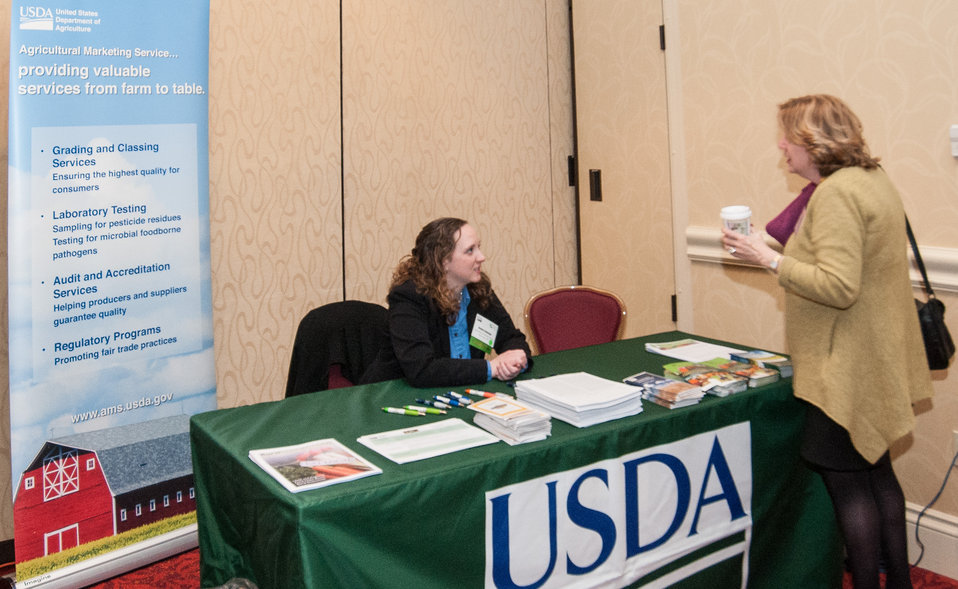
Agricultural Marketing Service (AMS) provided information to participants at the 2013 Agricultural Outlook Forum, held at the Crystal Gateway Marriott Hotel, Arlington, Virginia on Thursday, Feb. 21, 2013. This annual Forum brings together producers, policymakers, and business, government, and industry leaders to meet, exchange ideas, and discuss timely agriculture issues.